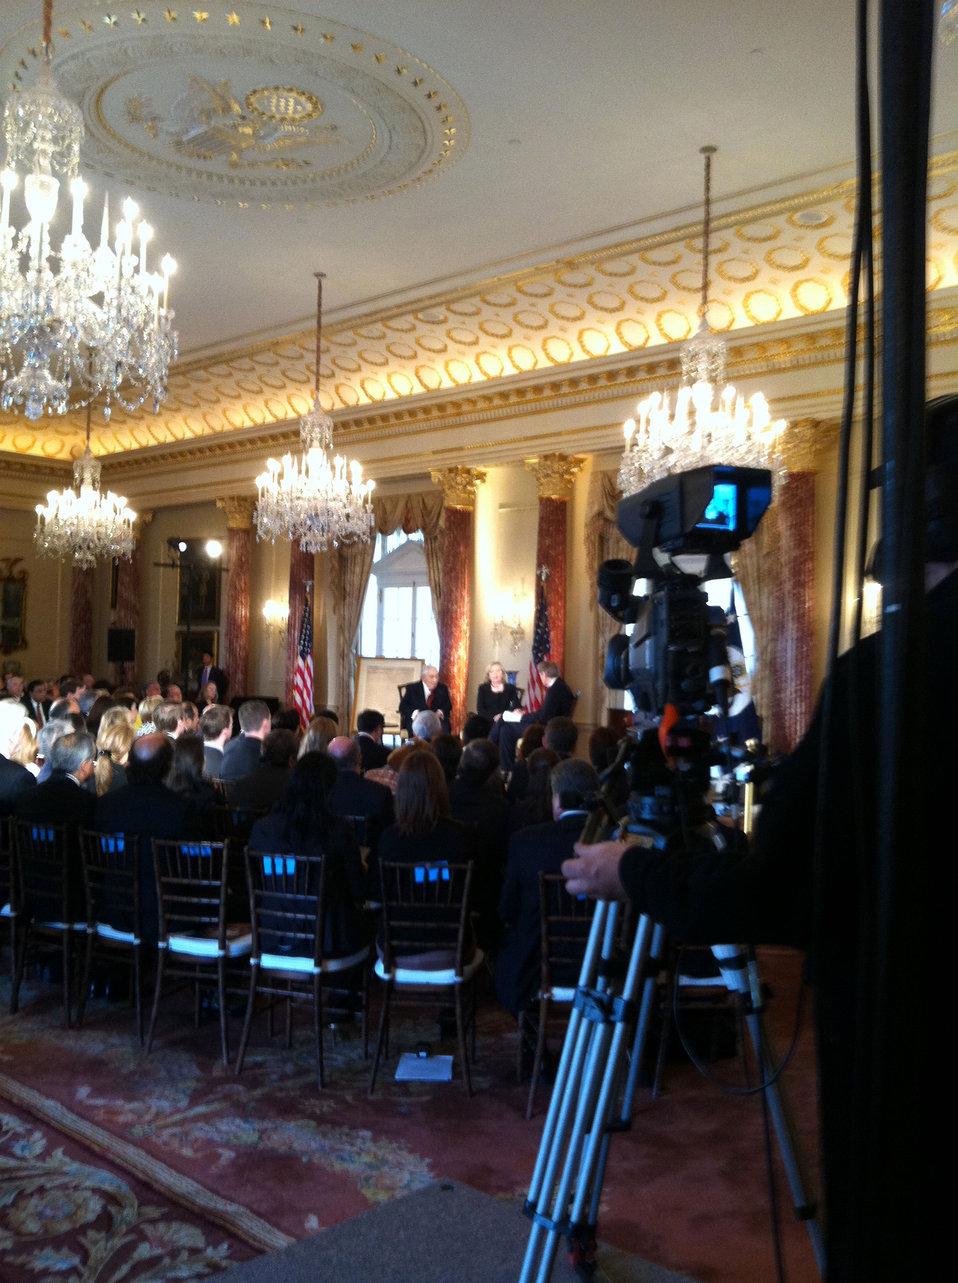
Secretary Clinton and Former Secretary Kissinger Film 'Conversations on Diplomacy, Moderated By Charlie Rose'

U.S. Secretary of State Hillary Rodham Clinton and former U.S. Secretary of State Henry Kissinger film, 'Conversations on Diplomacy, Moderated by Charlie Rose,' at the U.S. Department of State in Washington, D.C., on April 20, 2011.